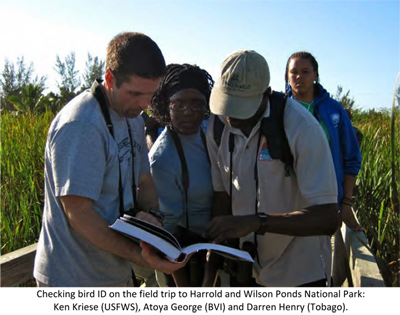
SCSCB-FWS-Interim-Report-2011